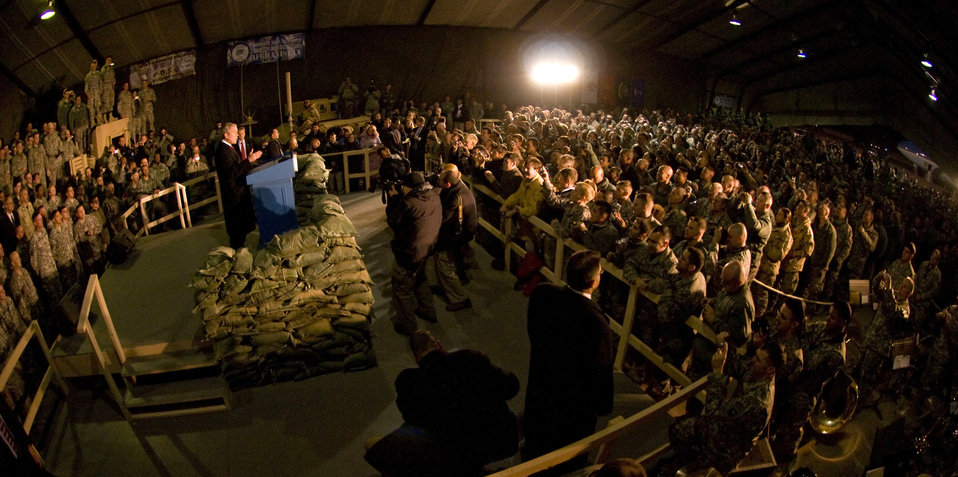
President Bush visits troops in Bagram

President George W. Bush addresses a crowd of military personnel and civilians gathered Dec. 15 at Bagram Airfield, Afghanistan. President Bush offered words of encouragement about the continued conflict in Afghanistan.